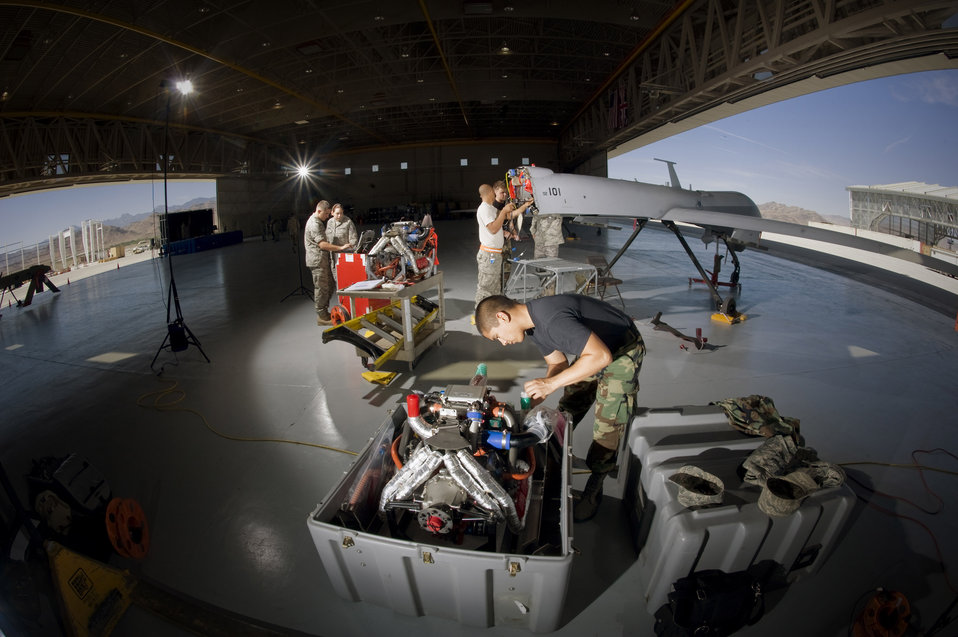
Air Force, Army leaders discuss new UAS concept of operations

Airmen from the 432nd Aircraft Maintenance Squadron work on one of the many unmanned aerial vehicles at Creech Air Force Base, Nev., June 19. Senior Airman Ignacio Reyes (right), ensures the Rotax engine for the MQ-1 Predator is sealed before boxing the engine for storage. Mr. Lester Sylvester shows Senior Airman Michael Osmun, how to the remove an oil line union, while Staff Sgt. Michael Rushing works on the union from inside the fuselage. Mr. Osmun is with Air Force Engineering and Technical Service. Staff Sgt. Alyssa Burns (second from left) shows structural maintenance technical data to Airman 1st Class Rex Leavitte.